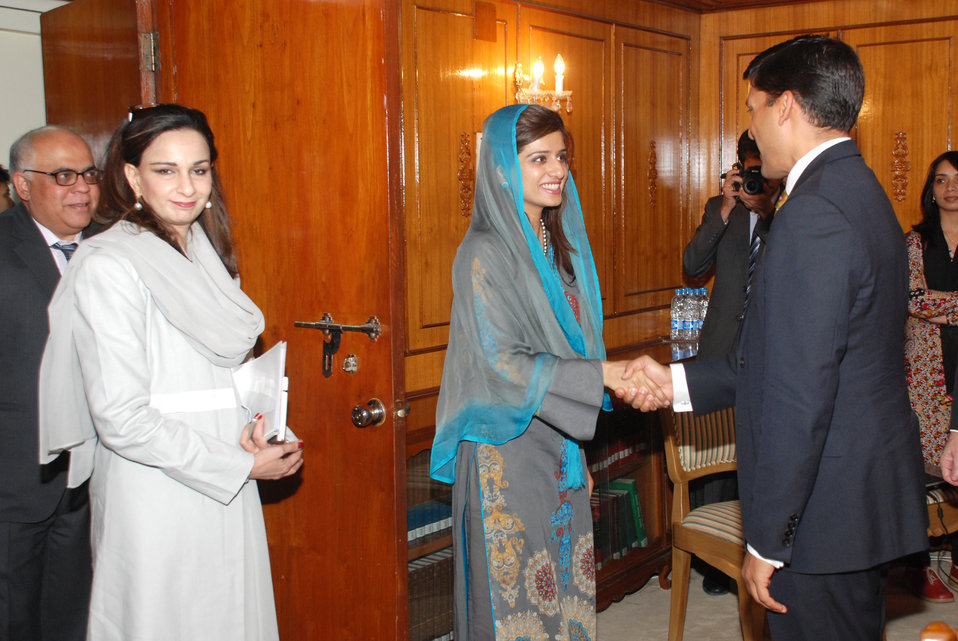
US officials Meeting with Minister of Foreign Affairs, Assistance to Pakistan Remains Strong at Islamabad on April 14, 2012